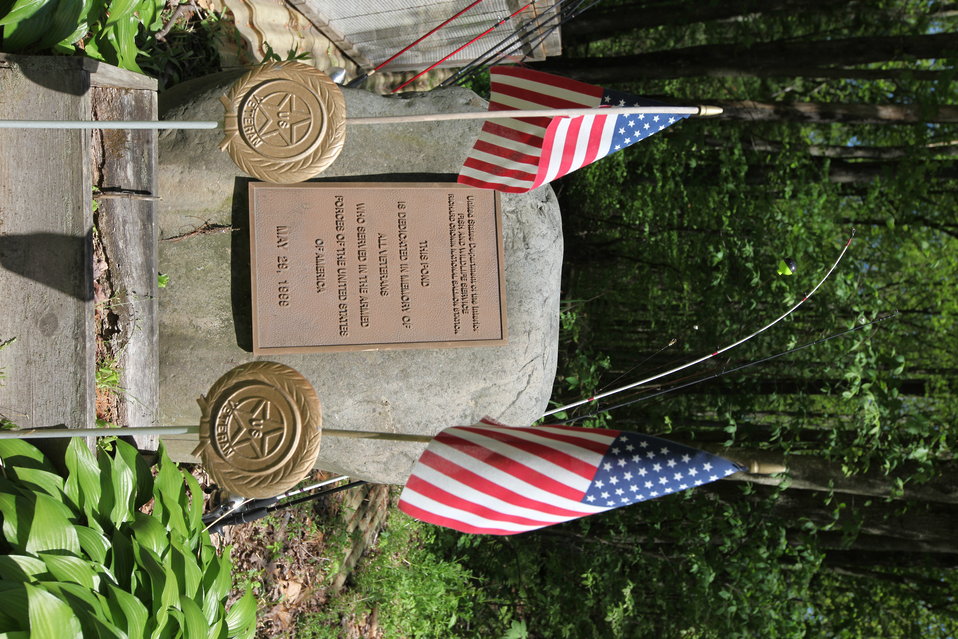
Youth Fishing Day 2012

Megan Nagel/USFWS